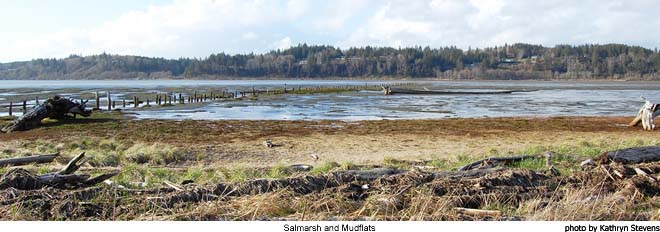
Saltmarsh and Mudflats - Grays Harbor National Wildlife Refuge

Salt-marshes and mud-flats are exposed during a low-tide in Grays Harbor NWR, Washington.